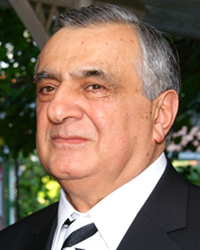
Roin Metreveli ქართული: ka:როინ მეტრეველი